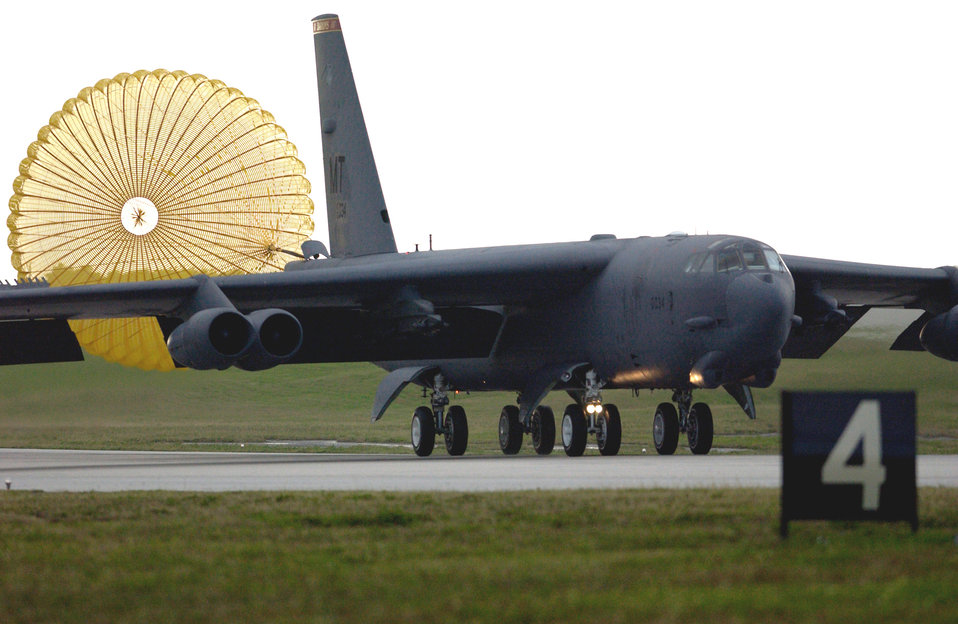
Buff coming to rest

ANDERSEN AIR FORCE BASE, Guam -- The first of six B-52 Stratofortresses taxis to its parking spot here after landing Feb. 22. The B-52s and about 300 people from Minot Air Force Base, N.D., are deploying here to support U.S. Pacific Command's request for a rotational bomber force on Guam.